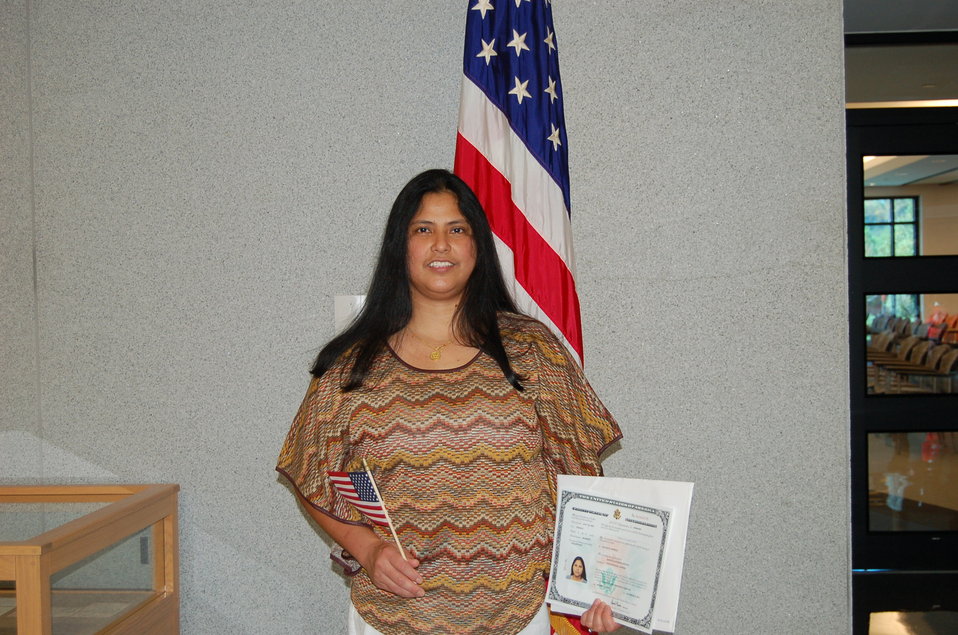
New Citizens